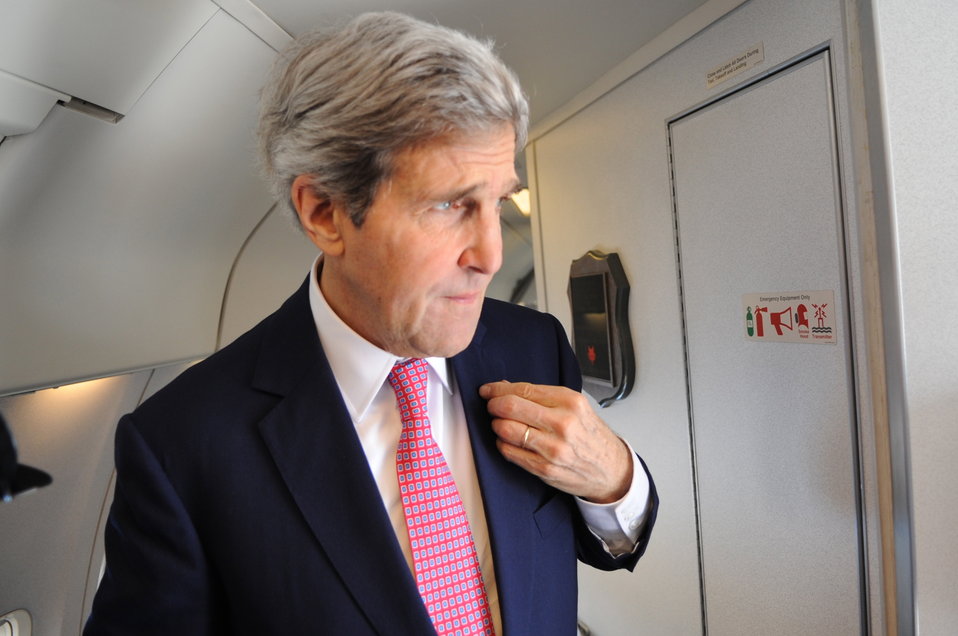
Secretary Kerry Adjusts American Flag Pin Before Arriving in Vietnam

U.S. Secretary of State John Kerry adjusts the American flag pin on his lapel before stepping off his plane and arriving in Ho Chi Minh City, Vietnam, on December 14, 2013.